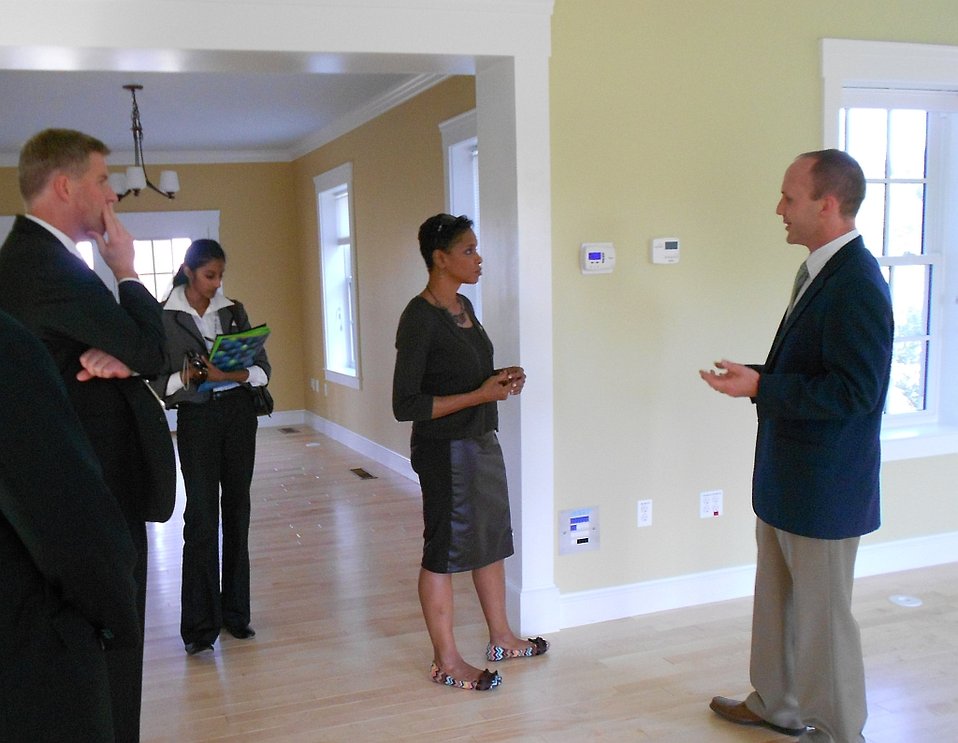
Edwards NZERTF Tour #4

William Healy (right), Leader of the Alternative Energy Systems Group in NIST’s Engineering Laboratory and NIST Director Patrick Gallagher (left) tour the 1st floor living spaces in the NIST Net Zero Energy Residential Test Facility with U.S. Congresswoman Donna Edwards (center) from Maryland’s 4th District.